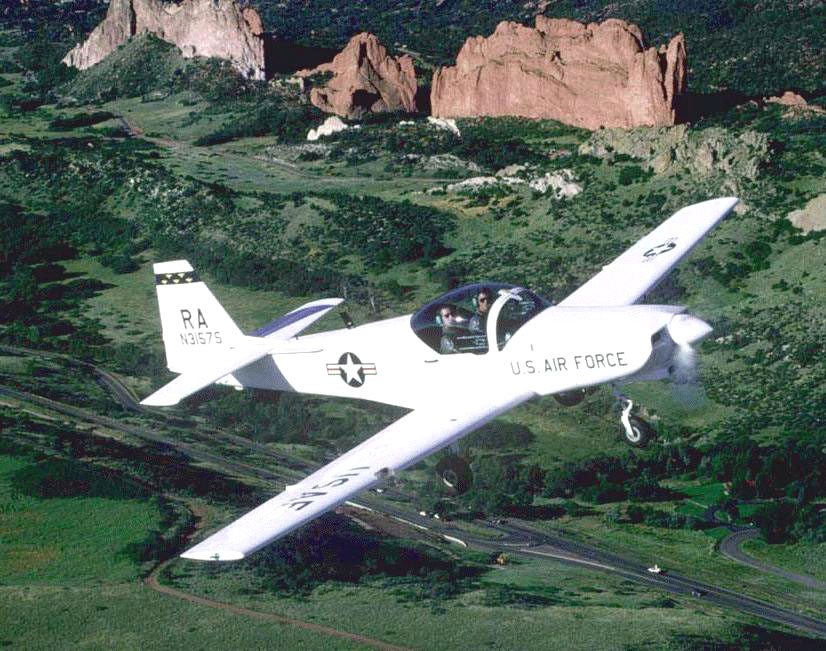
Officials announce T-3A Firefly final disposition

Nearly a decade after the Air Force stood down the T-3A Firefly fleet following three fatal accidents, Air Force officials have made a final disposition decision to salvage the aircraft in place.